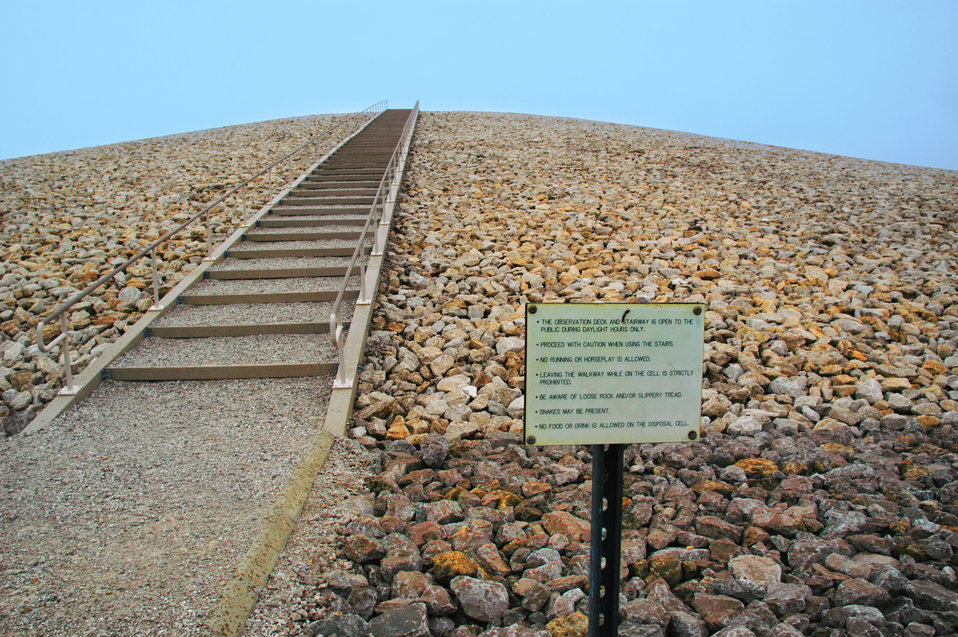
5

Weldon Spring